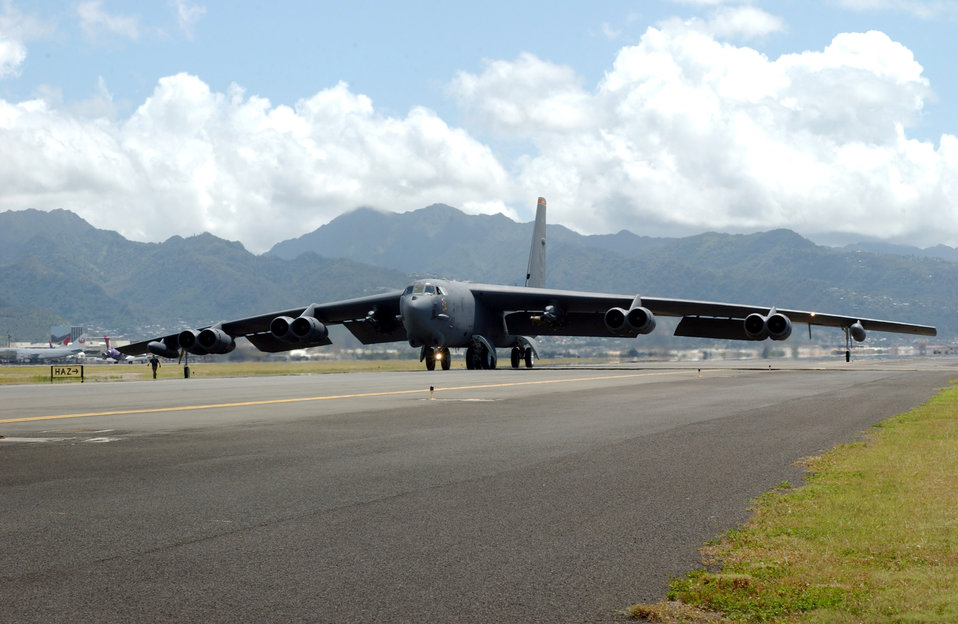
Escape to Hawaii

HICKAM AIR FORCE BASE, Hawaii -- A B-52 Stratofortress taxis on the runway April 6. Four B-52s arrived here from Andersen Air Force Base, Guam, to escape Typhoon Sudal which missed the island April 7. The B-52s are deployed to Andersen from Minot AFB, N.D.